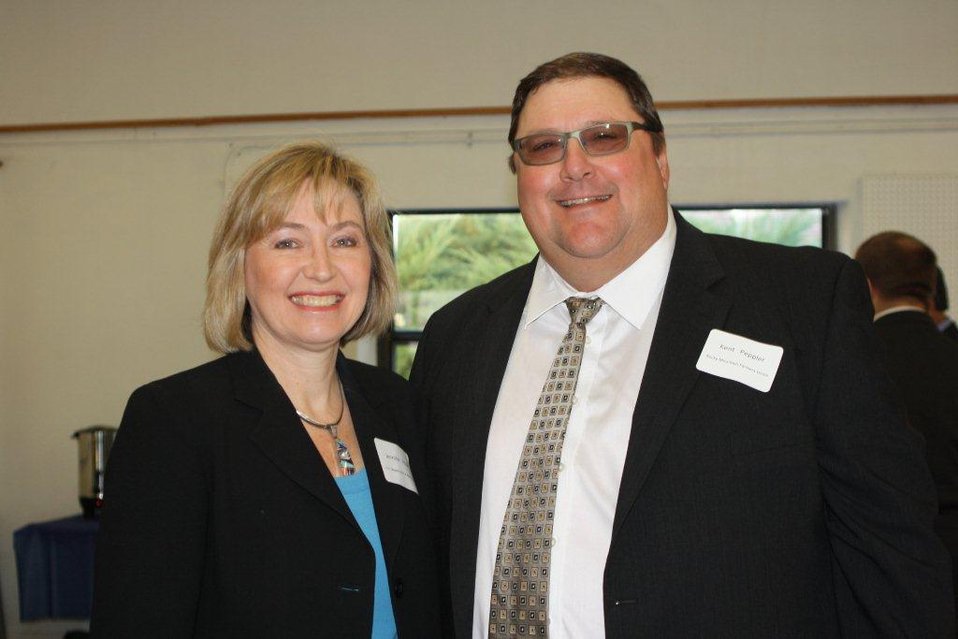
Kent Peppler, President of the Rocky Mountain Farmers Union discusses the days' events with USDA Director of External and Intergovernmental Affairs Jennifer Yezak.